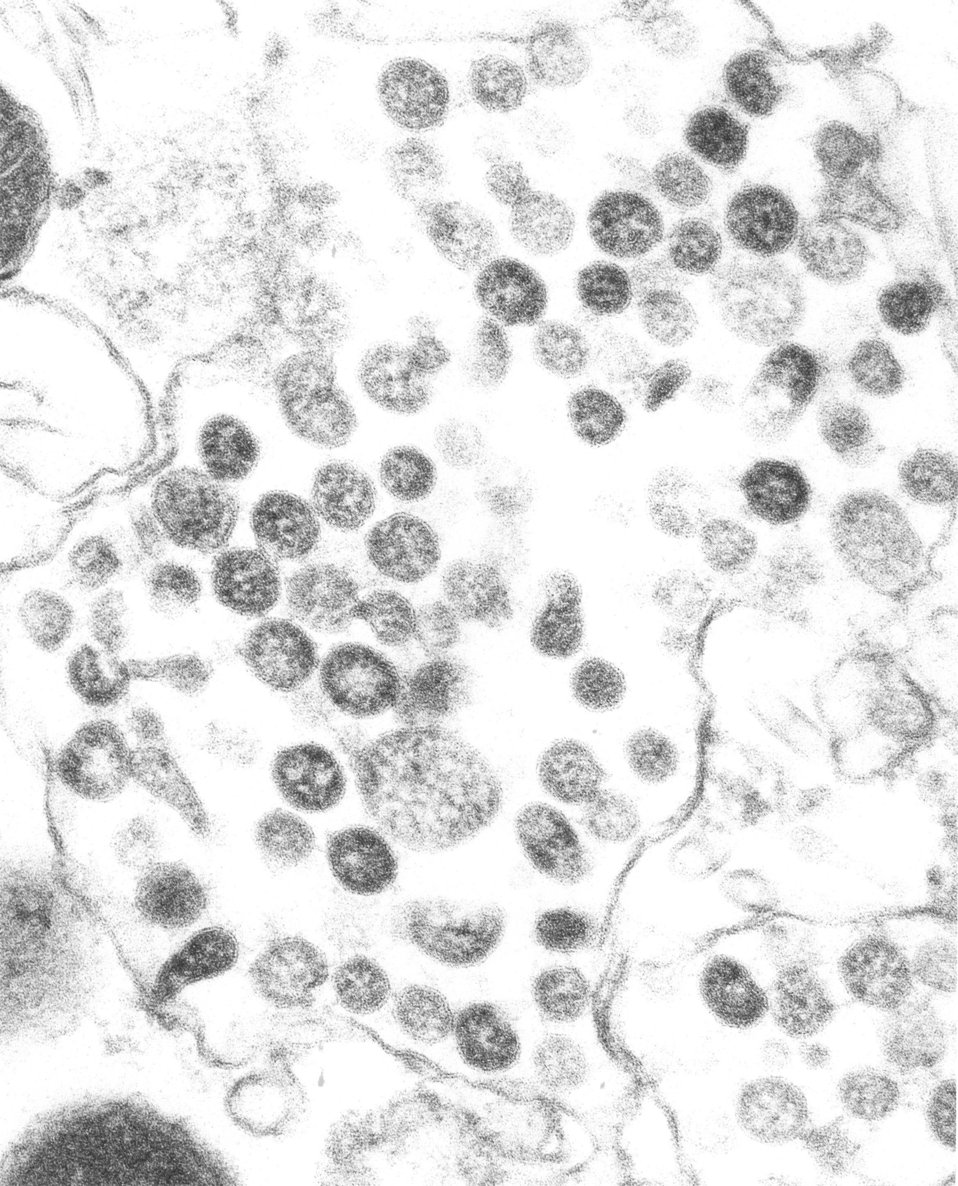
Coronaviruses are a group of viruses that have a halo or crown-like (corona) appearance when viewed under a microscope.